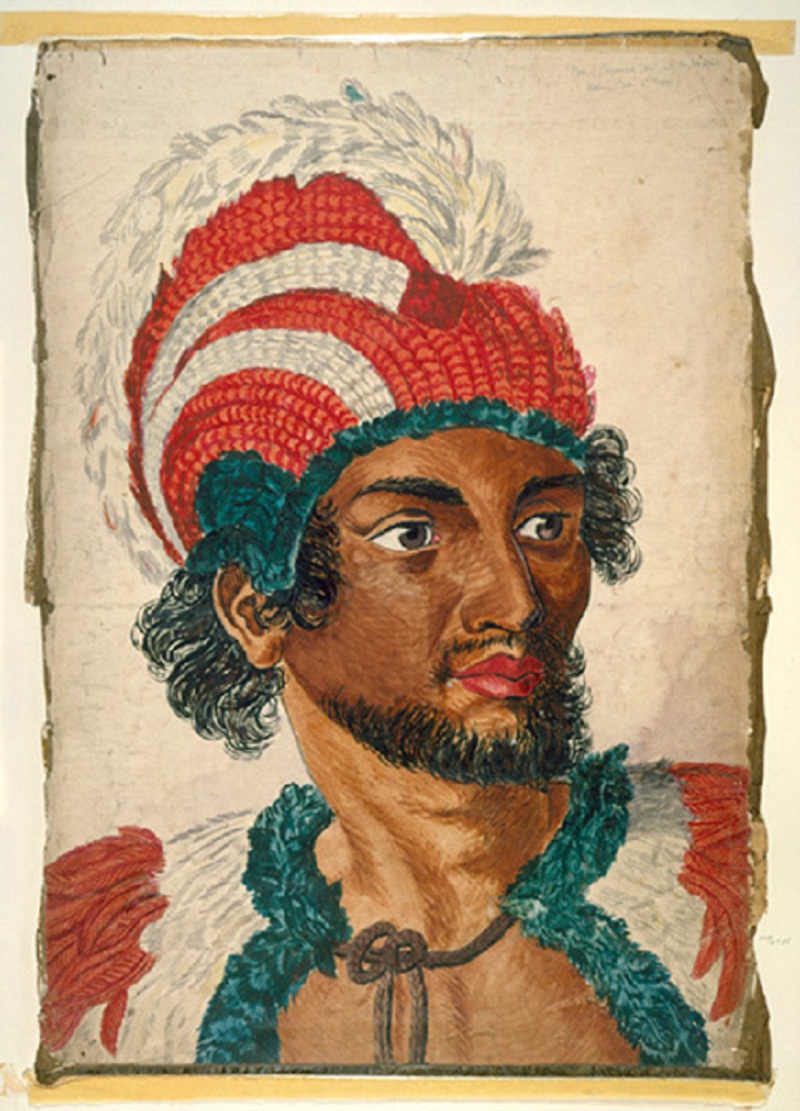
'A Man of the Sandwich Islands with His Helmet' (unknown artist, c. 1830)